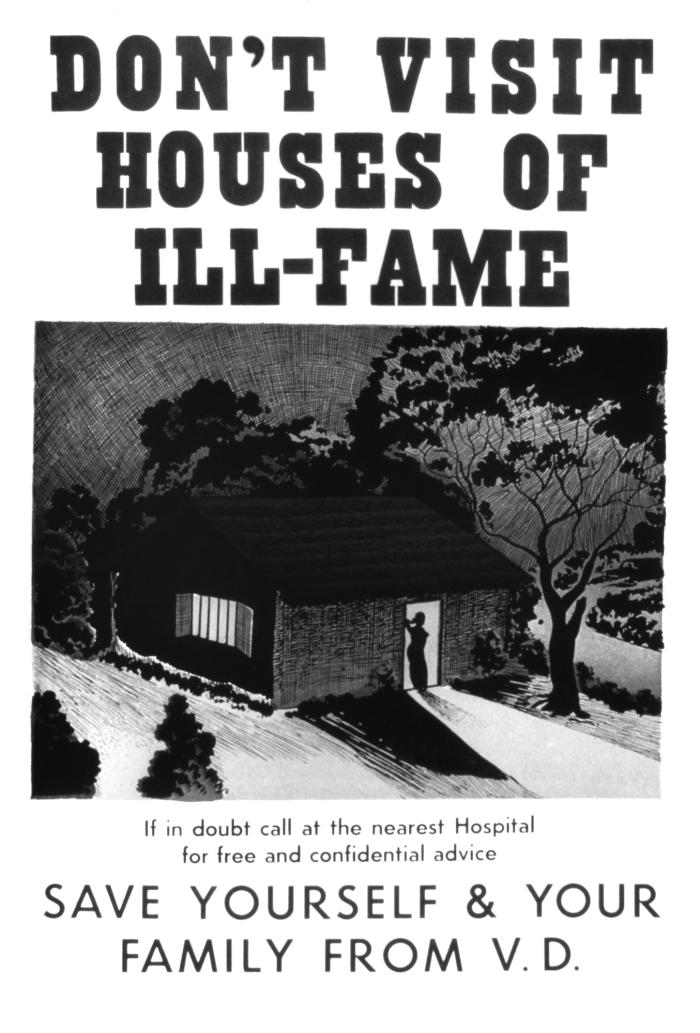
Used in a 1940s health campaign, this poster directed at soldiers during World War II, urged servicemen to avoid visiting 'Houses of Ill-Fame', so as to not contract sexually transmitted diseases.